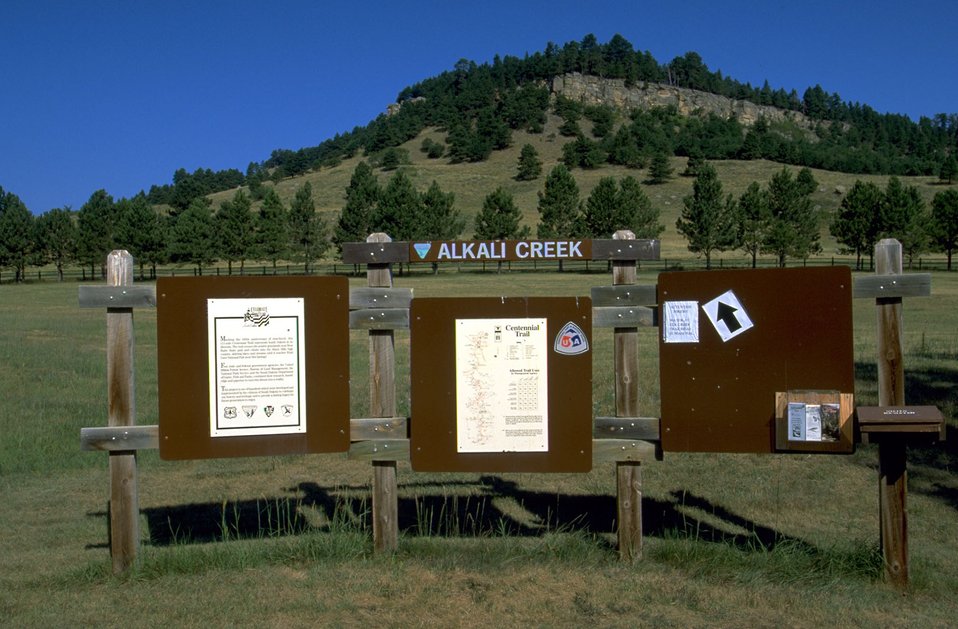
Alkali Creek Trailhead Information Board, looking north